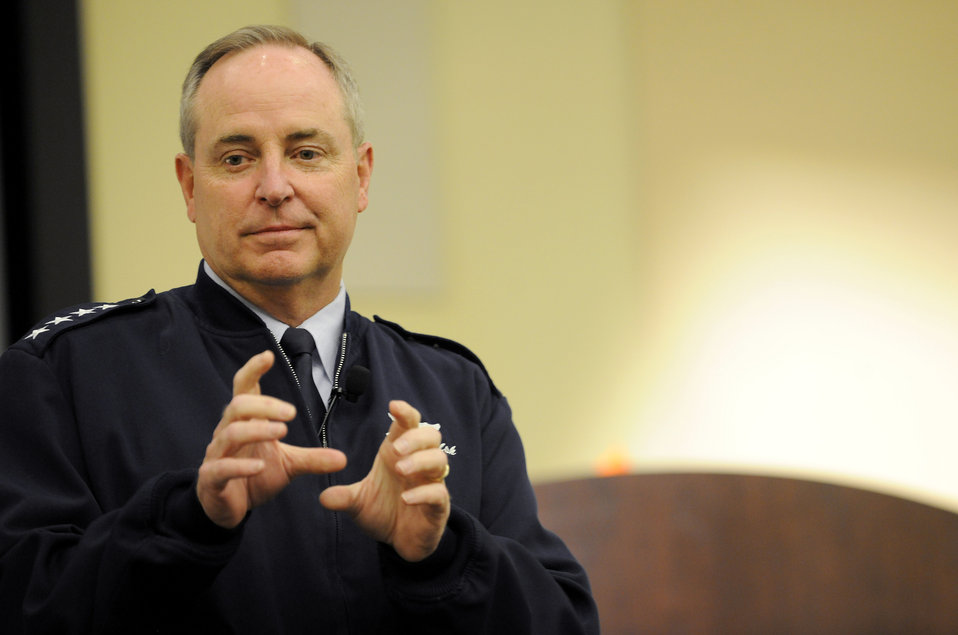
Caring for People

Air Force Chief of Staff Gen. Mark A. Welsh III makes opening remarks for attendees of the Caring for People forum at Joint Base Andrews, Md., on Sept. 26, 2012. This is the fourth annual forum which recognizes Air Force-wide Key Spouses and provides strategies for helping Airmen and their families.